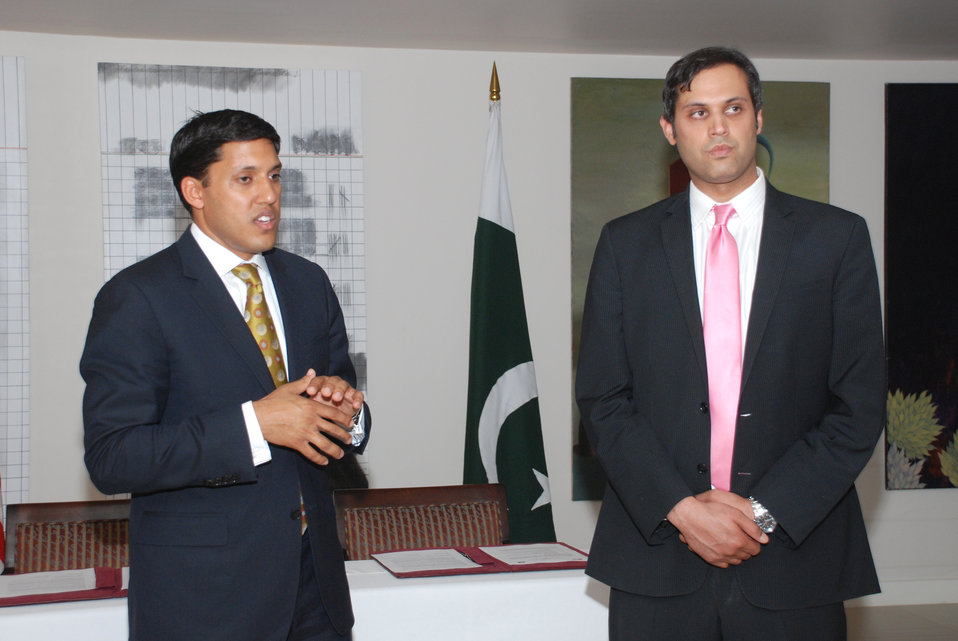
MoU Signing Ceremony between USAID and APF at Islamabad on April 18, 2012

Dr. Rajiv Shah Addressing the Officials